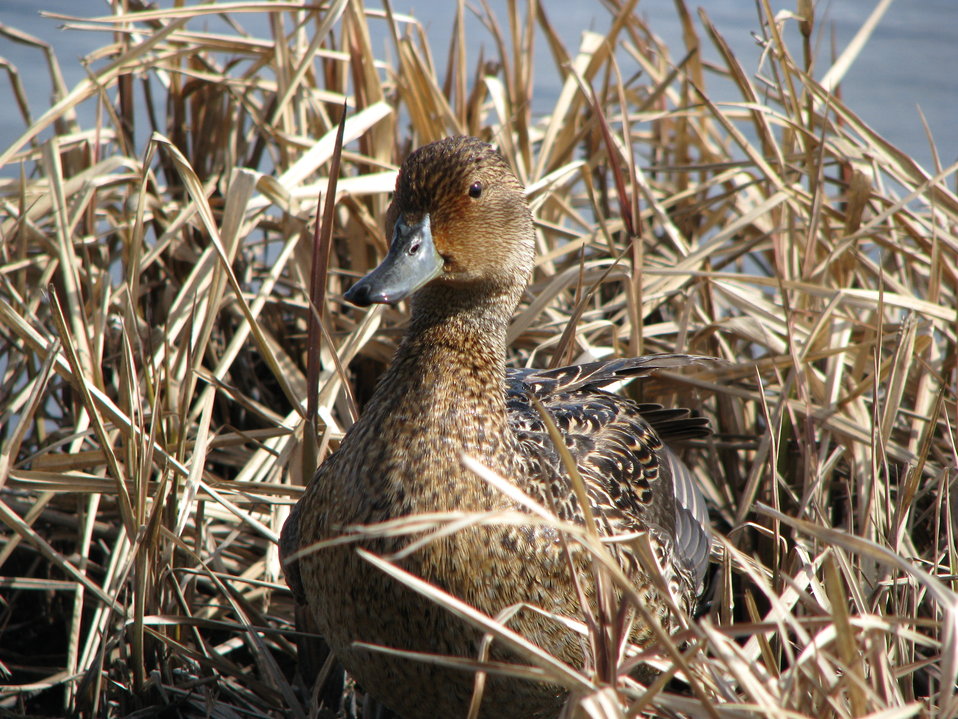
Female pintail

USFWS Yukon Delta NWR